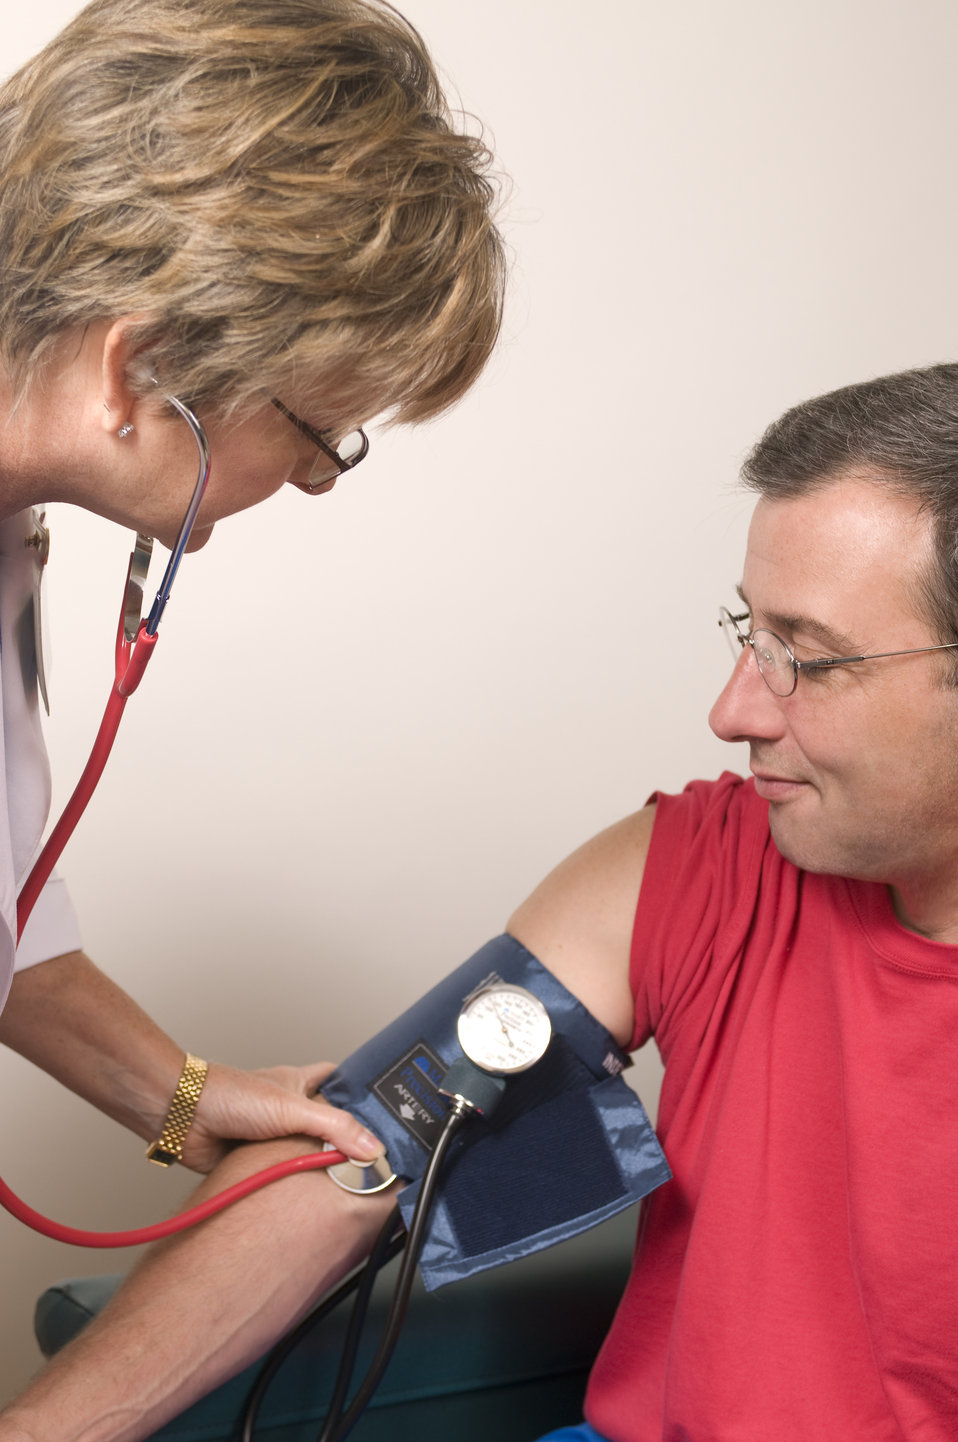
This image depicts a female clinician in the process of conducting a blood pressure examination upon a seated male patient in a clinical setting. The healthcare provider was using a sphygmomanometer, consisting of a pressurized cuff encircling the patient's right upper arm, and a monitor indicating changes in pressure within the cuff, as well as a stethoscope in order to listen for, and record the sounds indicative of the high (systolic), and low (diastolic) pressure values used to measure a patient's blood pressure.